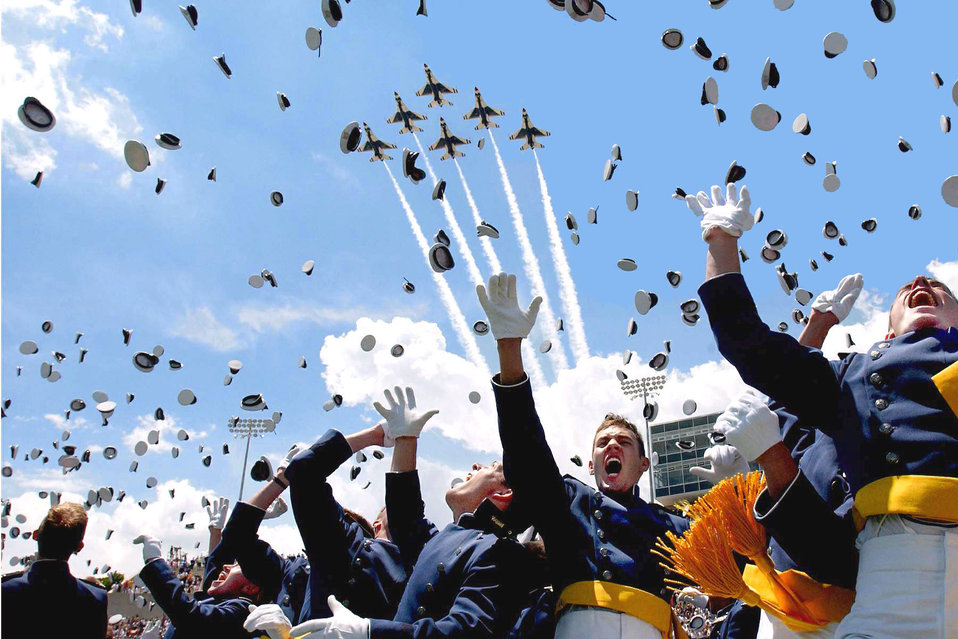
Graduation celebration

U.S. AIR FORCE ACADEMY, Colo. -- Cadets of the Air Force Academy Class of 2003 celebrate at graduation ceremonies here May 28 as the Air Force Thunderbirds fly overhead. The 974 students marked the academy's 45th graduating class.